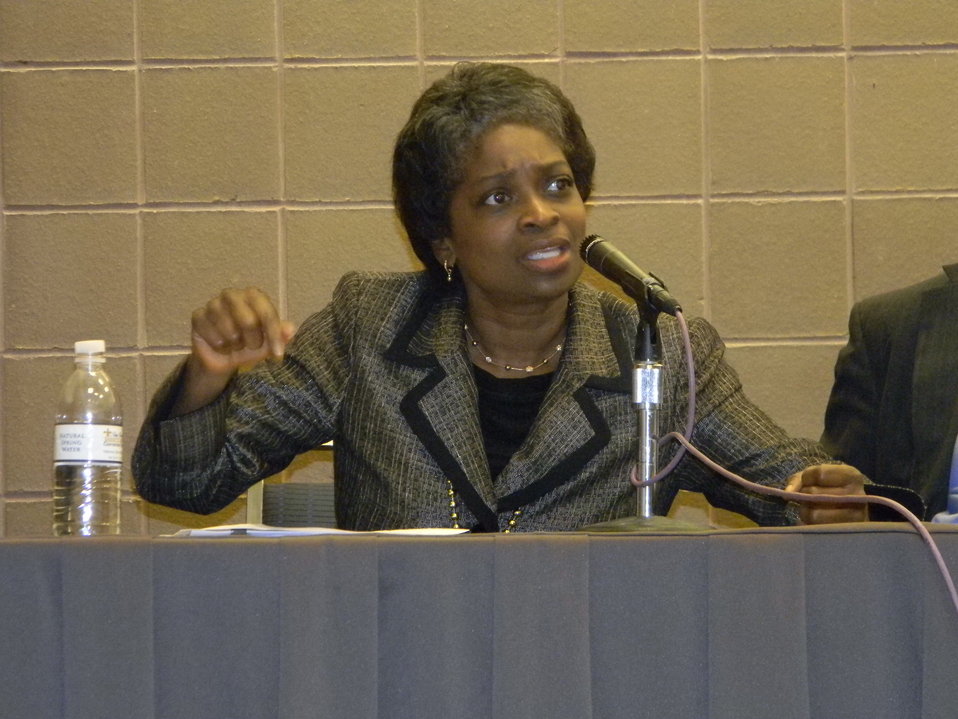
2012 National Urban League Conference